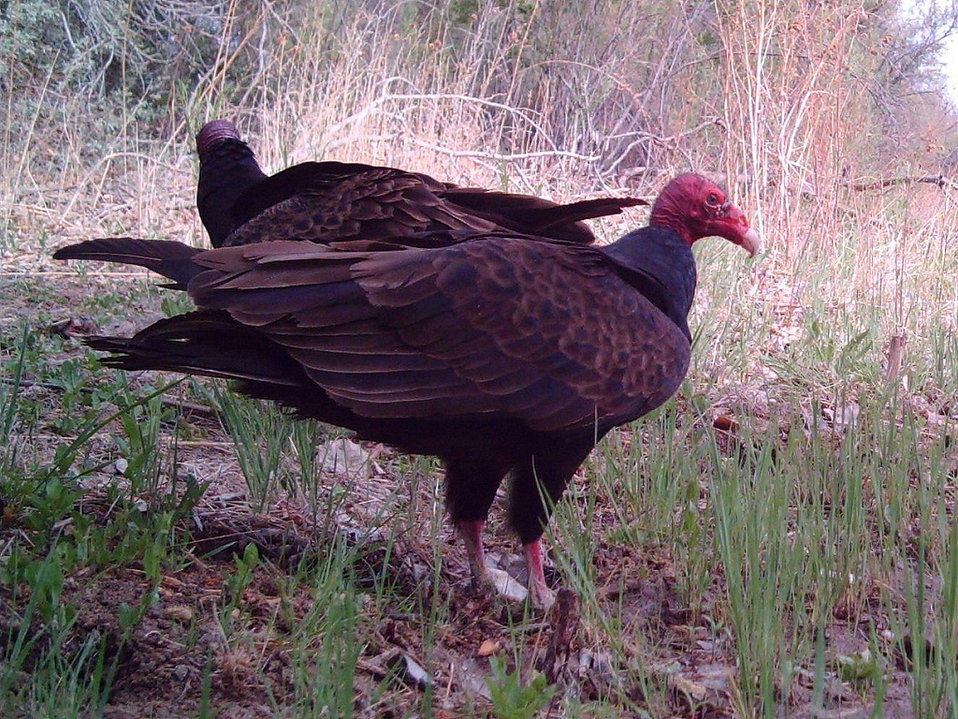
turkey vultures

Bosque del Apache National Wildlife Refuge, NM
Camera trap project by Matthew Farley, Jennifer Miyashiro and James Stuart
Photo made available by J.N. Stuart, Creative Commons